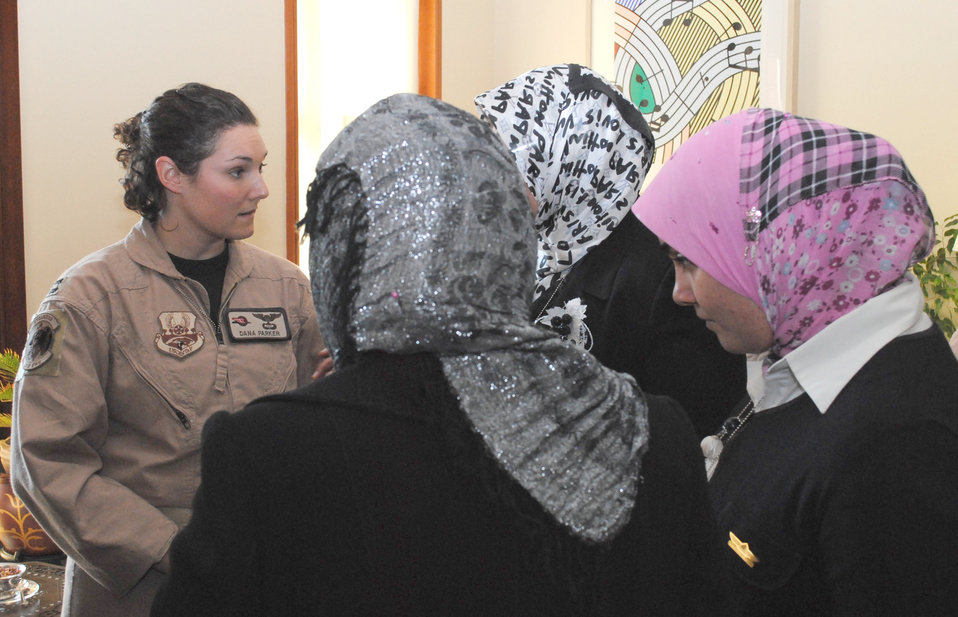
Horizon East

Capt. Dana Parker talks to several Iraqi women about her experiences in aviation during a luncheon for the Horizon East Women in Aviation, International chapter at the U.S. Embassy Jan. 7, 2011, in Baghdad. The Women in Aviation, International was established to encourage women to seek opportunities in aviation career fields and interests. Captain Parker is a C-130 Hercules and MC12 pilot from the 362nd Expeditionary Reconnaissance Squadron.